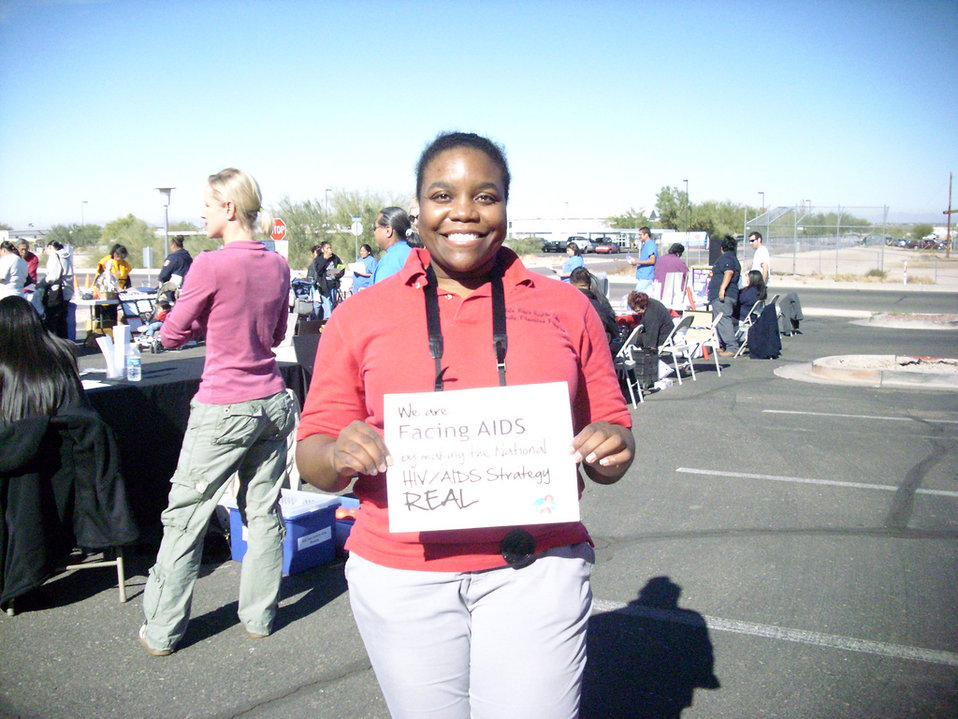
We are Facing AIDS through NHAS-19